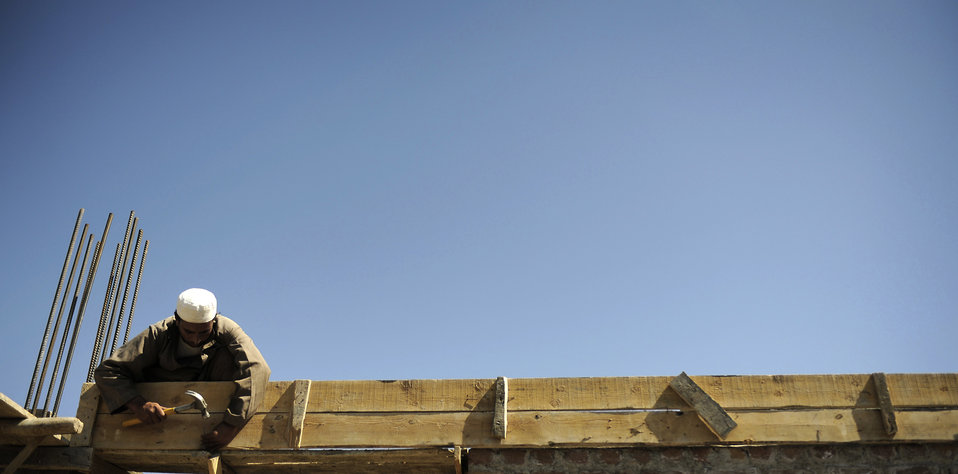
Afghanistan's future foundation

A local contractor lays the frame for a development site May 30, in Nangarhar Province, Afghanistan. The development is monitored by the Nangarhar Provincial Reconstruction Team, Forward Operating Base Finley-Shields, Afghanistan. The PRT is responsible for development and reconstruction projects in Nangarhar Province. The projects are built by local and contractors and are designed to improve the livelihood of the people living in the area.